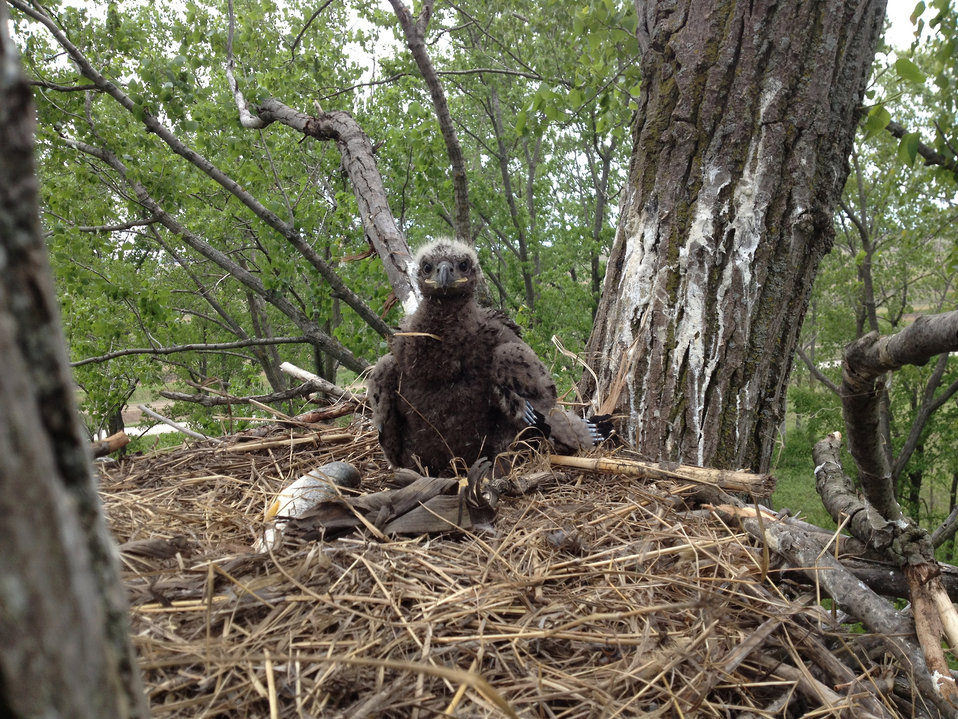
Bald eagle in nest, May 2013 Photo By USFWS Jeremy N. Moore

Bald Eagle eaglet May 24, 2013.

Photo by USFWS; Jeremy N. Moore